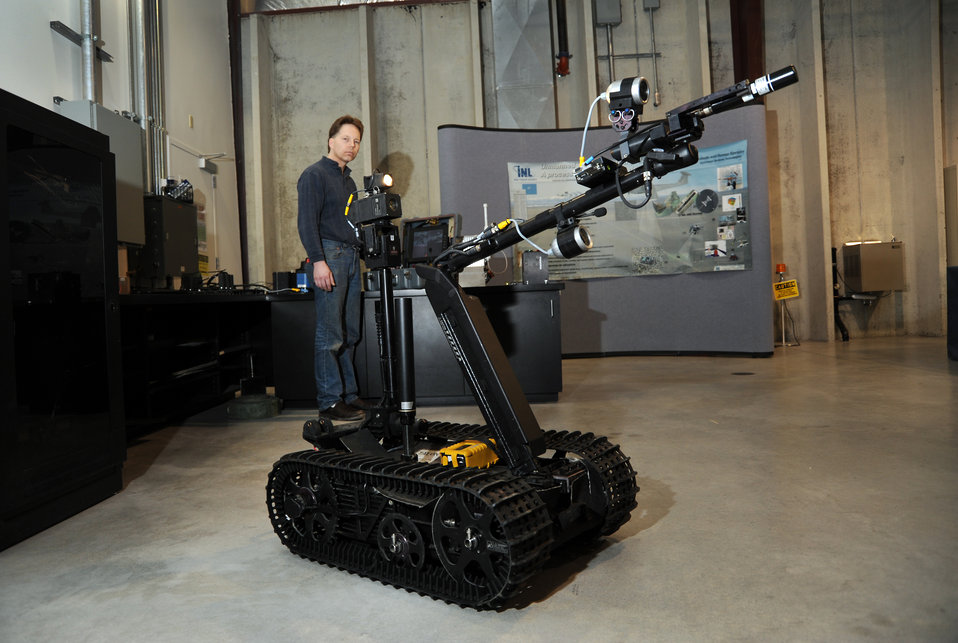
IDAHO NATIONAL LABORATORY WILL EQUIP A TALON ROBOT, WHICH IS COMMERCIALLY AVAILABLE FROM QINETIQ NORTH AMERICA.

The robot has a suite of integrated sensors to provide visual, radiological survey, and /or mapping data about areas of the Japanese reactor site that are not accessible to humans due to radiation levels that may be above recommended safety guidelines. The robot shown here is not yet equipped with these devices because the final configuration has not been determined.